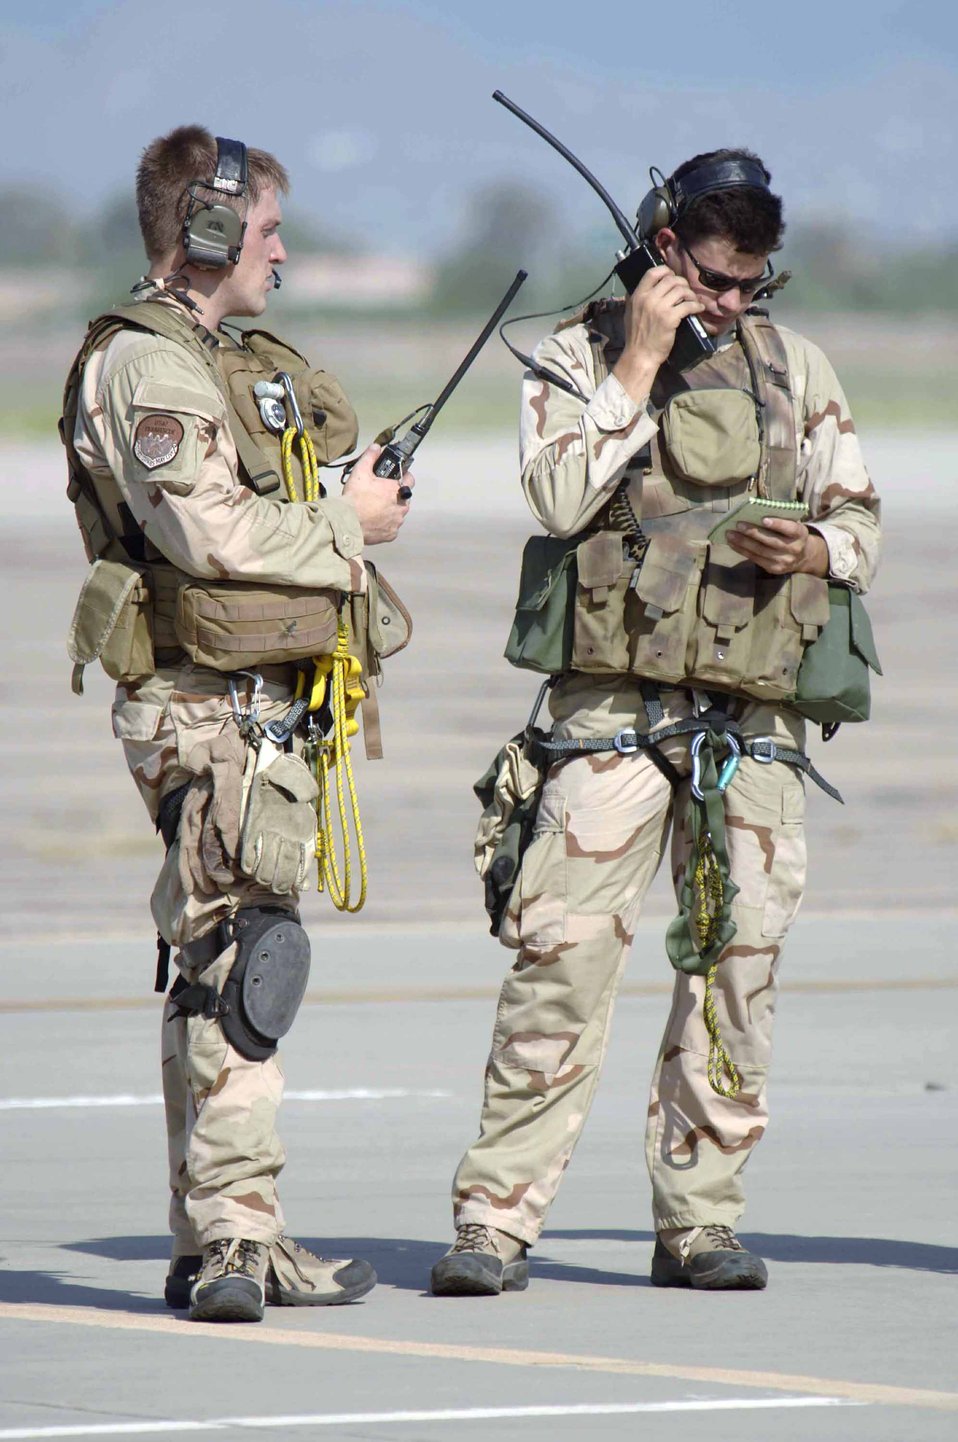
Angel Thunder

Staff Sgt. Ivan Eggel (right) and Senior Airman Troy Patrick test their radios and equipment before flying to Gila Bend, Ariz., on July 25 for rescue training as part of Exercise Angel Thunder. The five-day exercise, held at Davis-Monthan Air Force Base, Ariz., and other areas is designed to provide realistic combat search and rescue training for active-duty, Reserve and Guard Airmen in combat rescue forces. Sergeant Eggel and Airman Patrick are pararescuemen with the 48th Rescue Squadron,